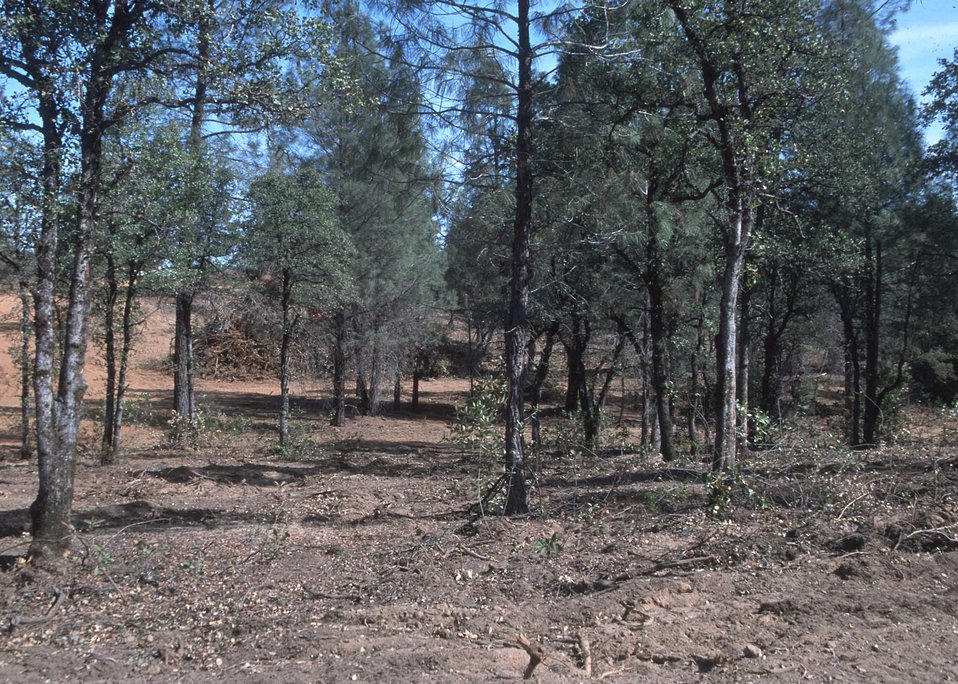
Fuel Break.